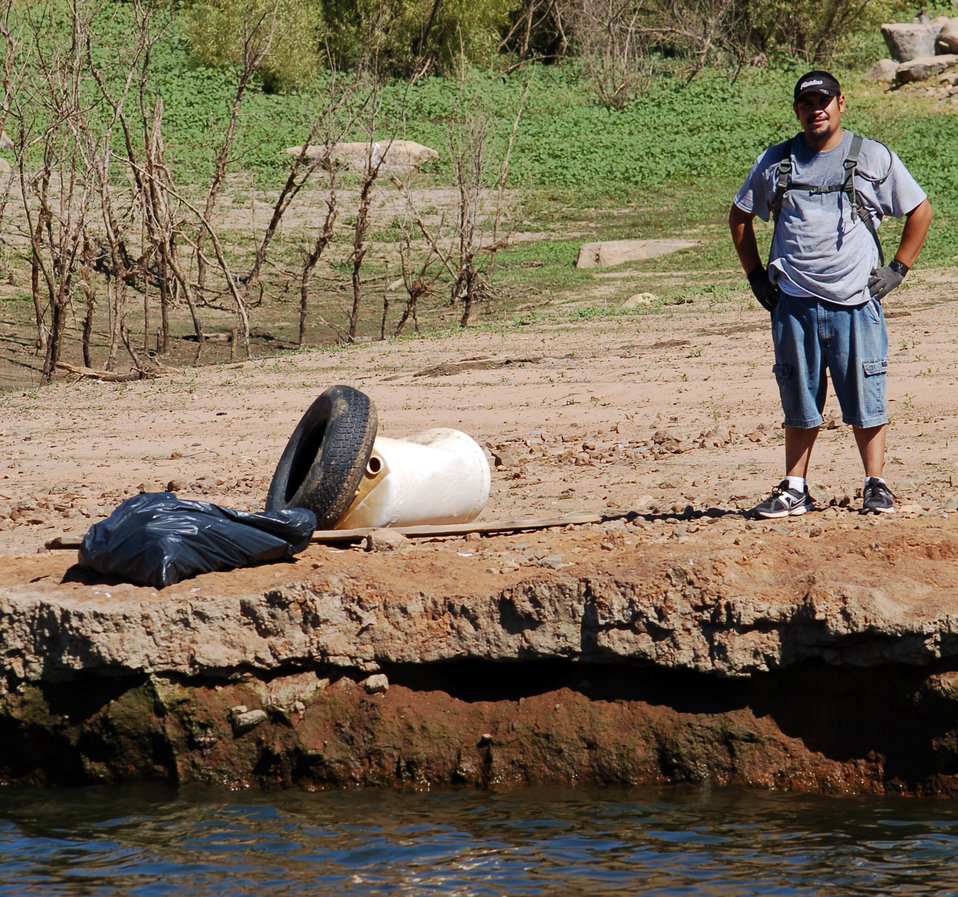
NPLD 2013 USACE Sacramento District

A National Public Lands Day volunteer awaits collection of the debris he recovered along the north shore of Lake Kaweah during National Public Land Day, Sept. 28, 2013. Lake Kaweah is a U.S. Army Corps of Engineers Sacramento District park near Lemon Cove, Calif.